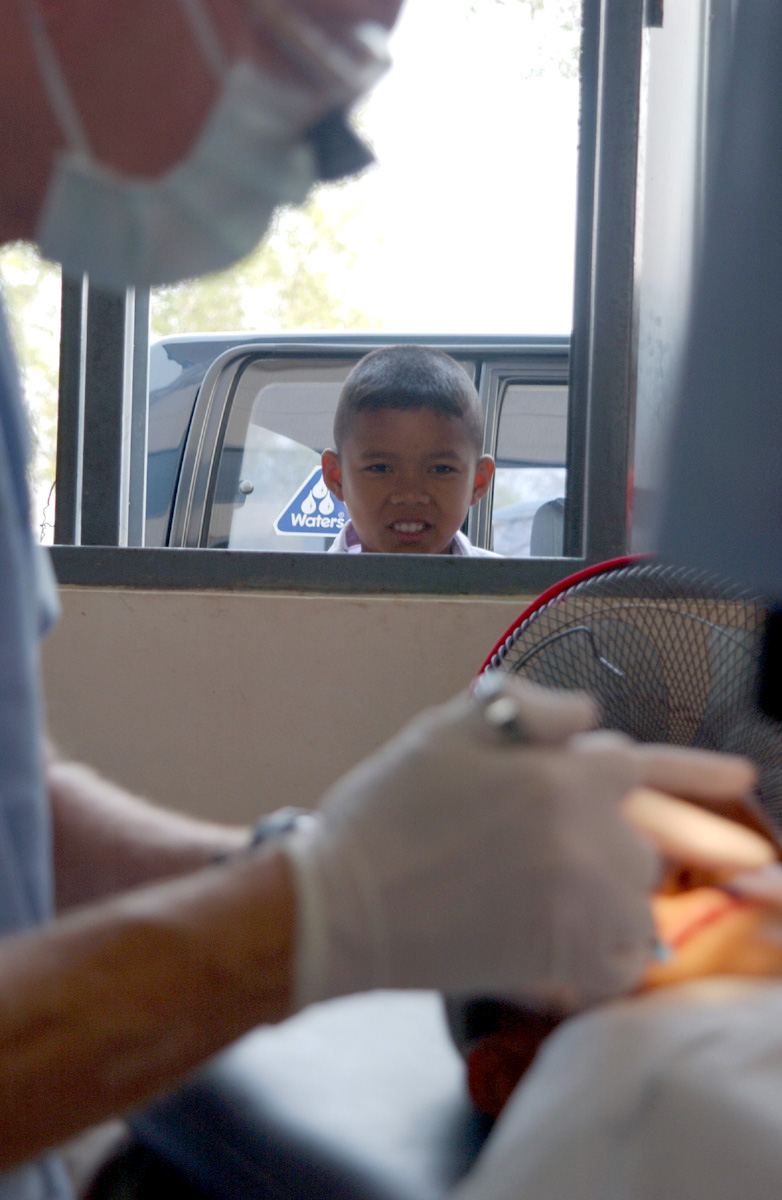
MEDCAP goes to Thailand

KORAT, Thailand -- A curious boy looks on as an Air Force dentist performs an exam on a Thai villager. A team of 20 U.S. physicians, dentists and medical technicians, here to conduct a medical and dental civic outreach program during Cope Tiger '04, treated more than 2,100 people during the three-day event.